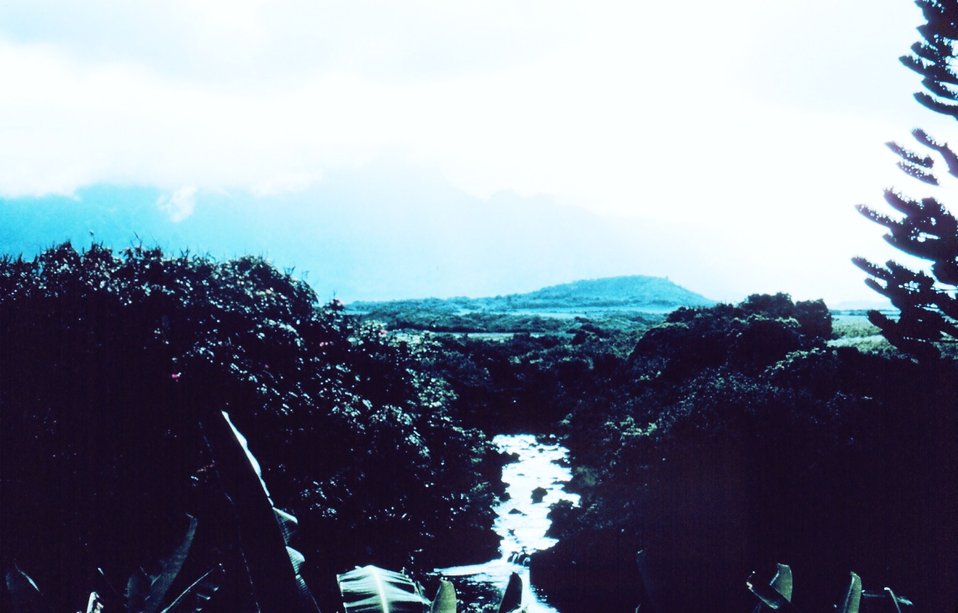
Wailua River from the Tropical Inn